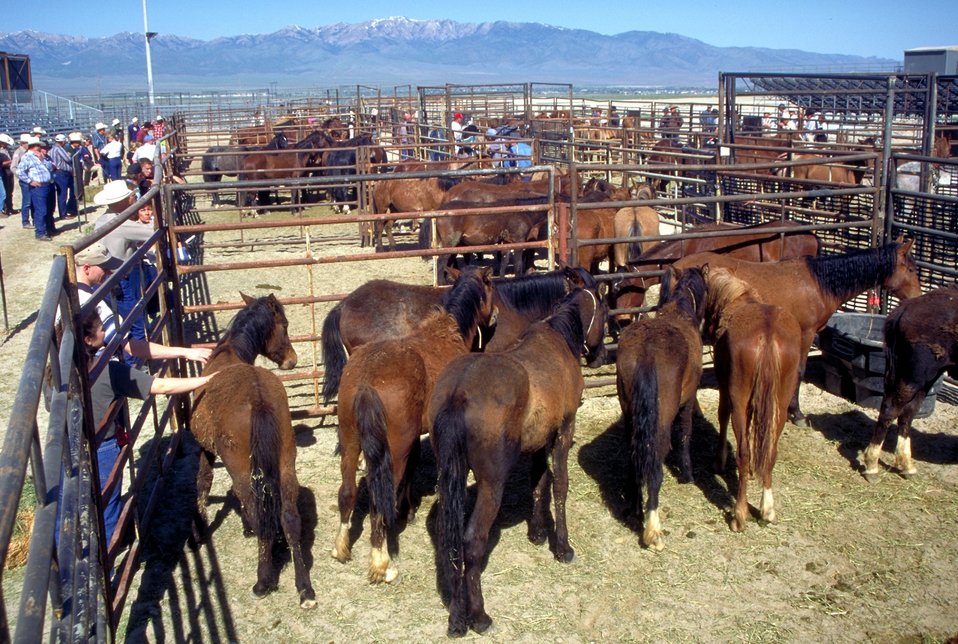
Utah Annual Wild Horse Festival.